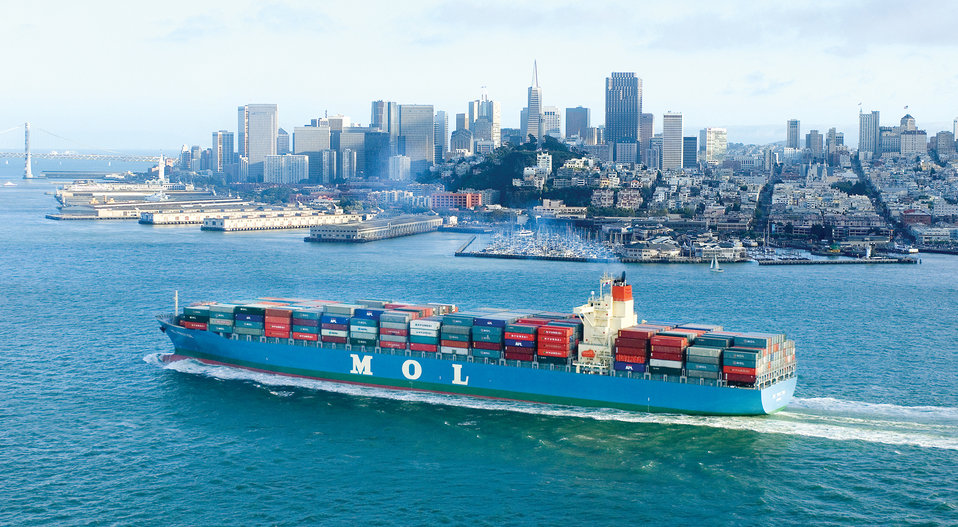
2006 Container Ship MOL PRESTIGE in the San Francisco Bay. IMO Number: 9321029 MMSI Number: 351861000 Callsign: 3EGH8